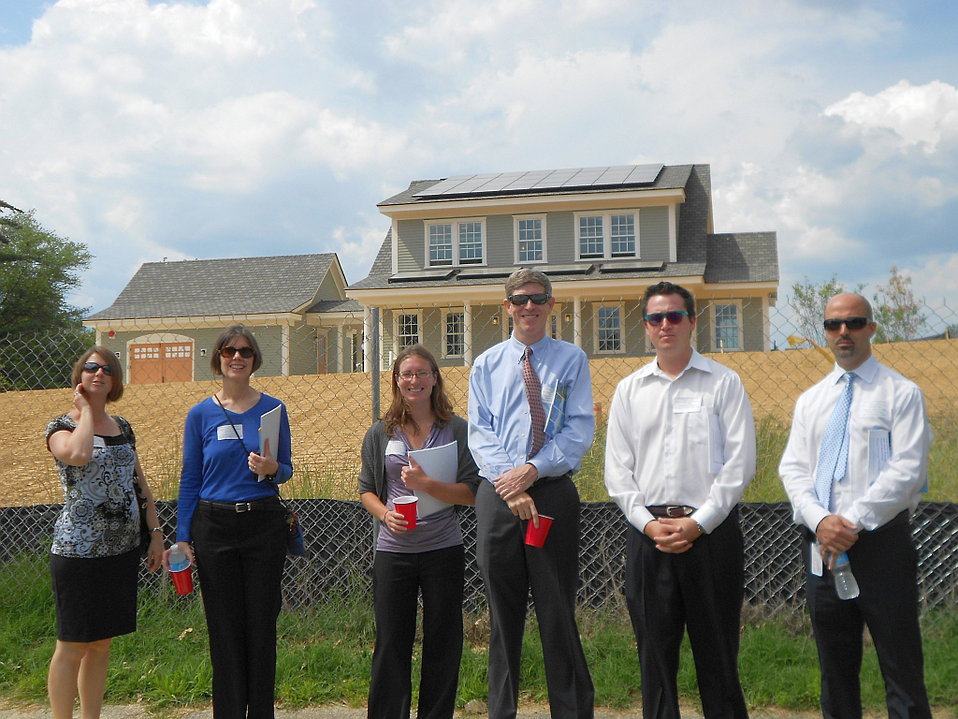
Net Zero Energy Residential Testing Facility Tour

Senate Energy & Natural Resources Committee staffers (left to right) Jennifer Malik, Deborah Estes, Allison Seyforth, Allen Stayman, Carl Slater and Amit Ronen complete tour of the NIST Net Zero Energy Residential Test Facility in the background.